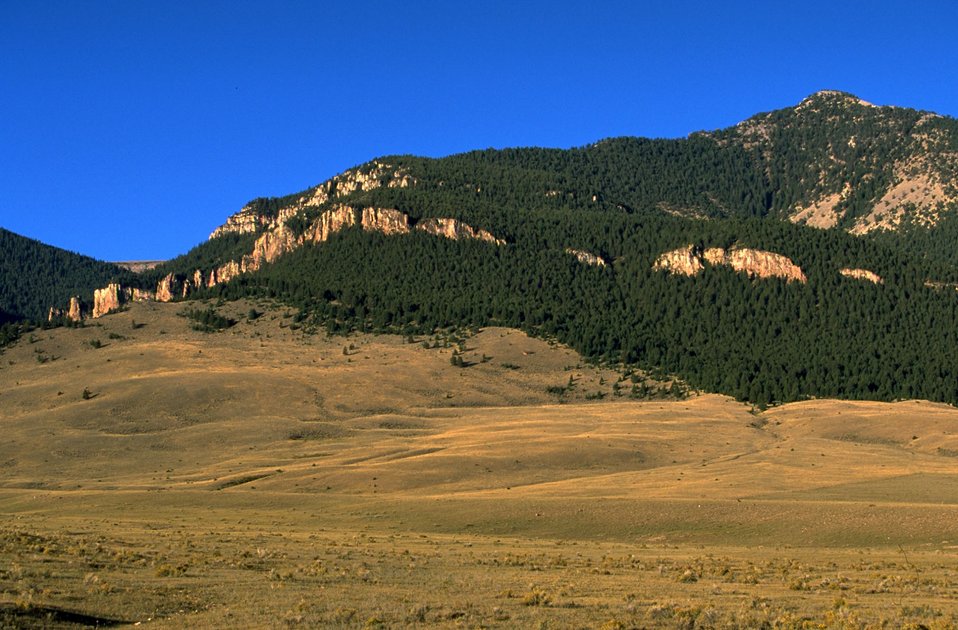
Valley floor with mountains in background